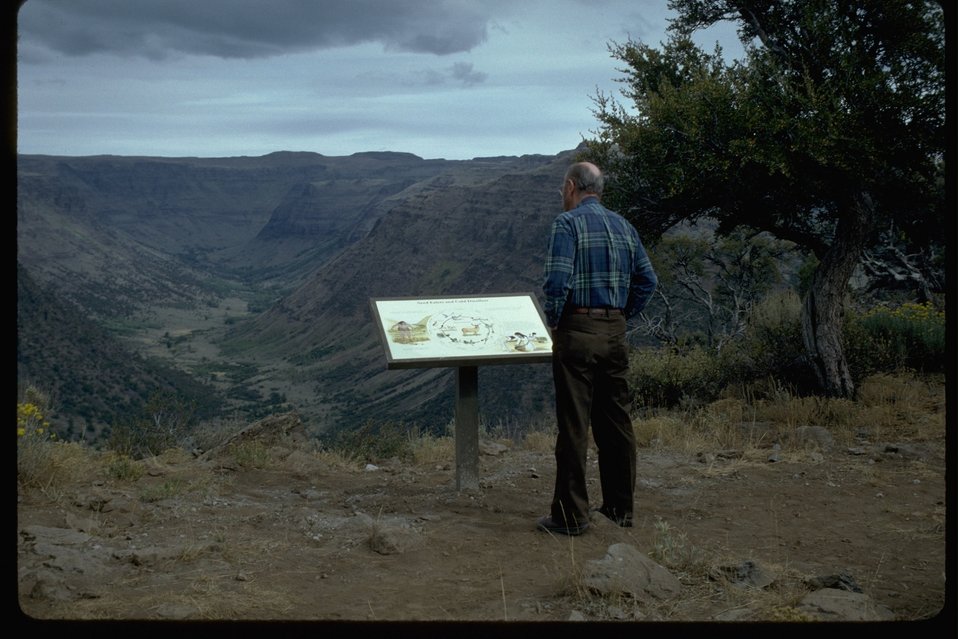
An Interpretive panel at Big Indian Gorge overlook of Steens Mountain.